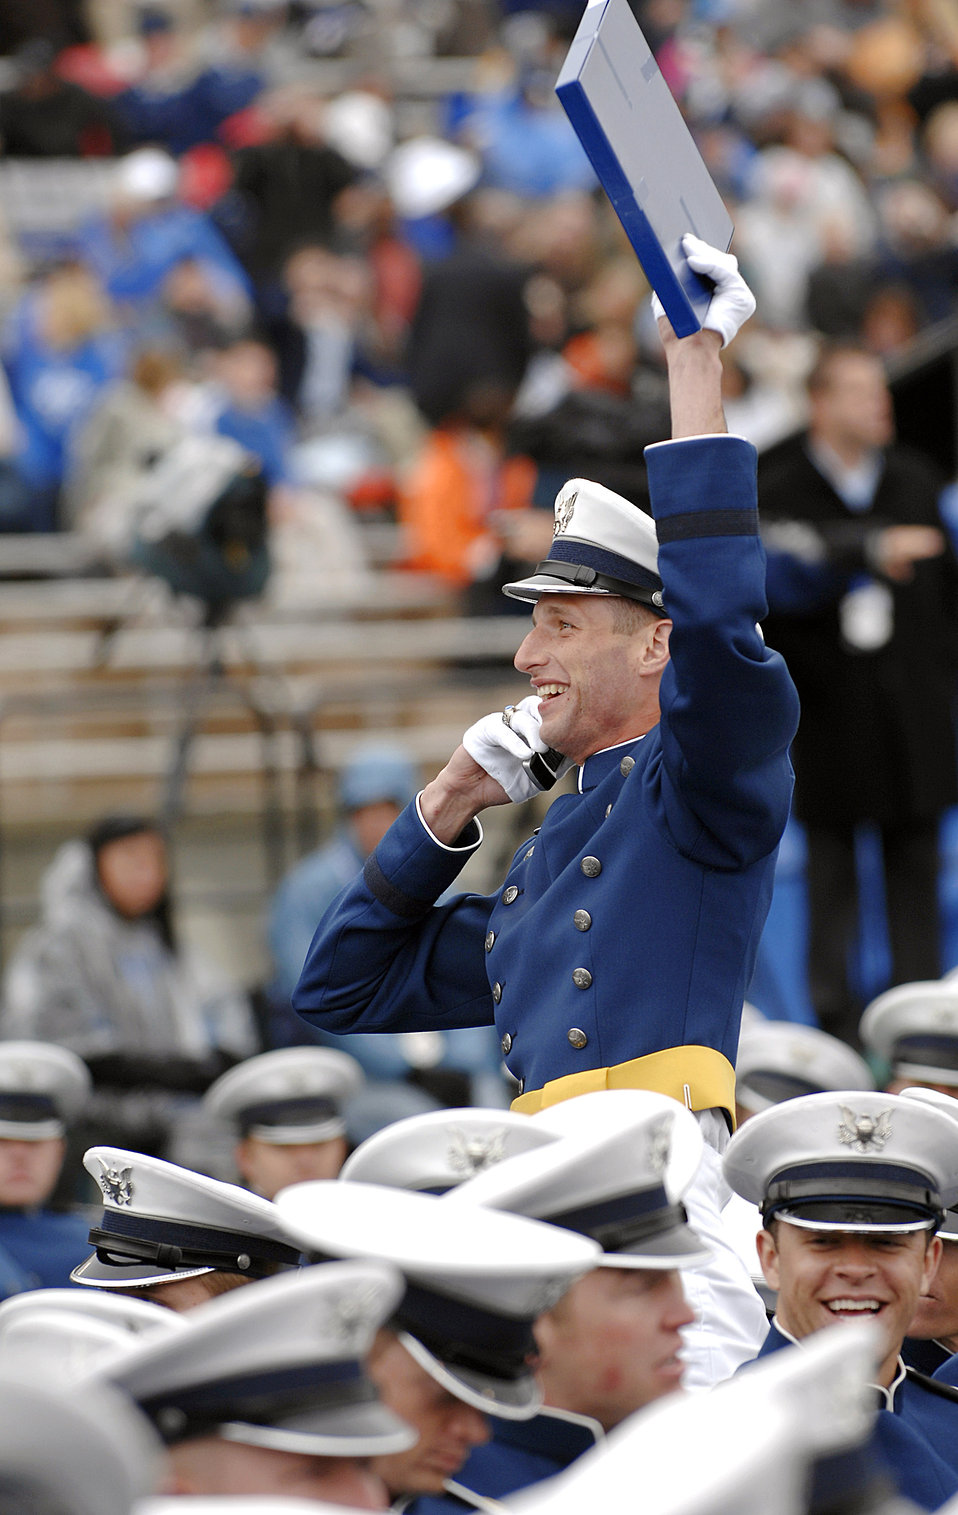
The 50th Academy class graduates

A cadet makes sure his family sees his diploma during Academy Class of 2008 commencement ceremony at the U.S. Air Force Academy's Falcon Stadium on May 28.